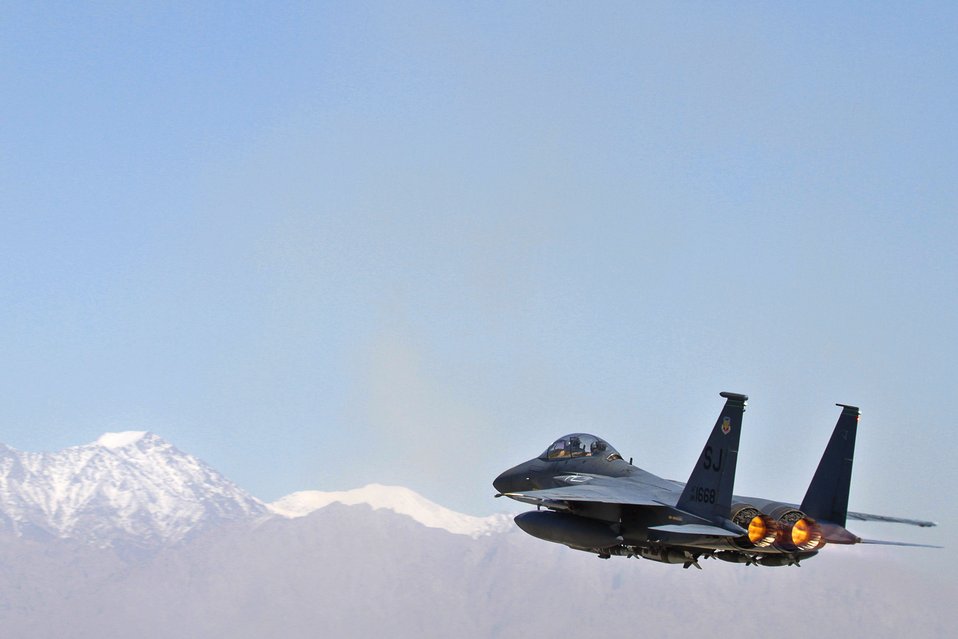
Eagles in Afghanistan

An F-15E Strike Eagle roars into the sky Oct. 6, 2011, over Afghanistan. The F-15s of the 455th Air Expeditionary Wing help provide aerial base defense for Bagram Airfield.